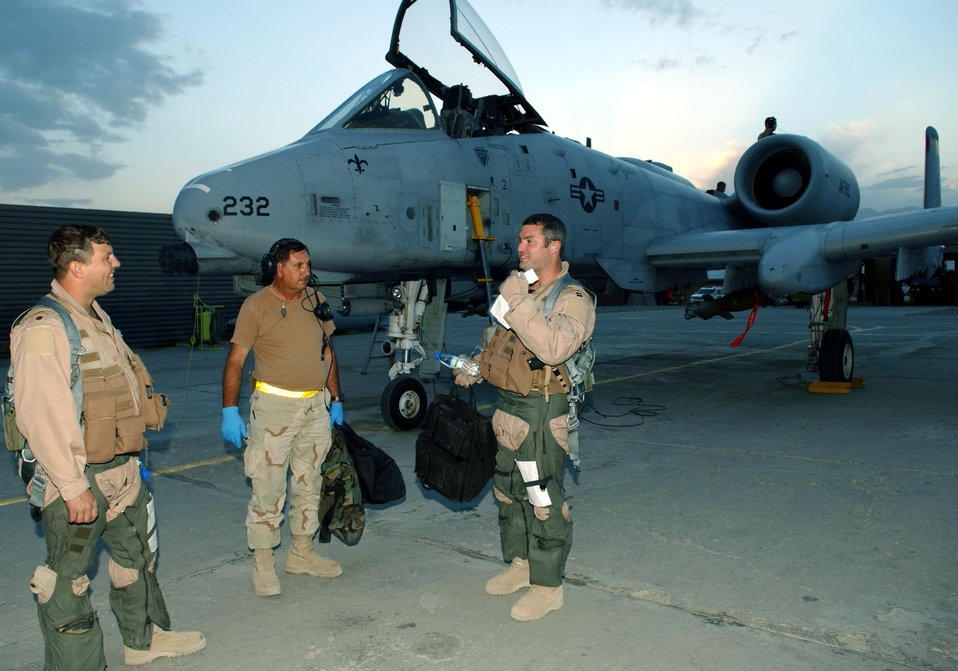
Reserve pilots not reserved when protecting ground troops

BAGRAM AIR BASE, Afghanistan --